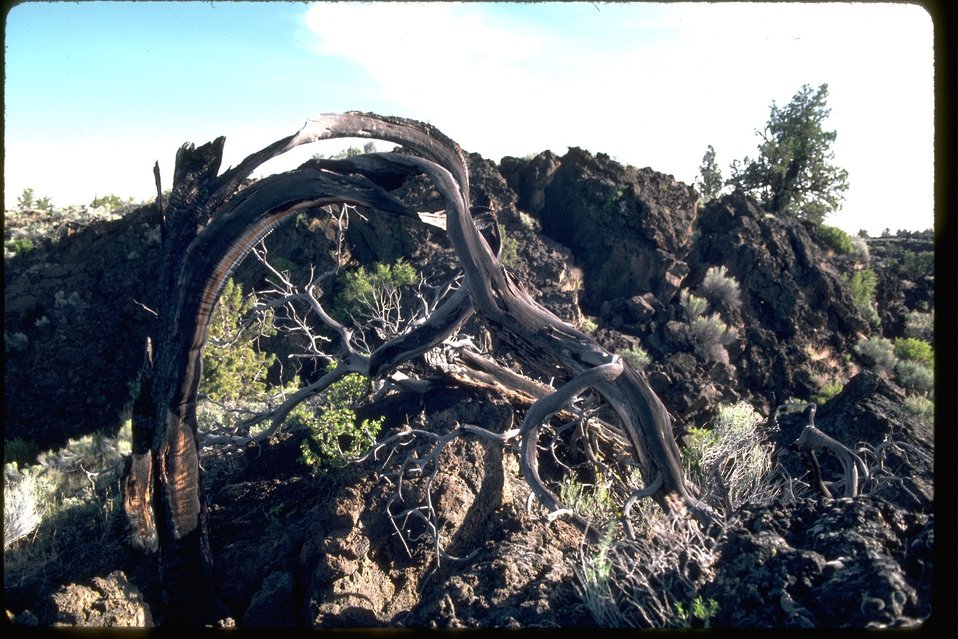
A twisted Juniper in lava rock at Squaw Ridge Lava Bed Wilderness Study Area. OR 1-3.